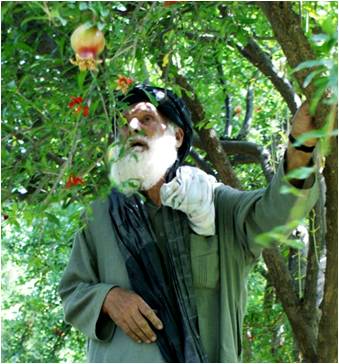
Best Harvest in 30 Years

As a village elder, Hajji Baba cares about his community and knows that his well-being is linked to the security of his envi-ronment and the prosperity of his fellow villagers in the Arghan-dab district of Kandahar Province. Hajji Baba was one of many Arghandab farmers suffering after several years of drought. The farmers couldn’t plough the land, had no fruit on the trees, and didn’t know what to do about the insects on the trees.

Addressing these problems, USAID’s Afghanistan Vouchers for Increased Productive Agriculture (AVIPA) Plus project delivered a large scale sapling project in Kandahar where 6,000 laborers planted 814,000 pomegranate, apricot, plum and grape saplings to rehabilitate more than 6,000 hectares of orchards previously pruned and cleaned by AVIPA Plus laborers.

Like other elders from the villages in southern Afghanistan where this USAID-funded program operates, Hajji Baba heard about AVIPA Plus from his district governor. In the Arghandab District Center, AVIPA Plus personnel asked the elders to pro-vide beneficiary lists for their villages. Soon, formerly unem-ployed people from his village were pruning and cleaning the orchards using new equipment with newly acquired skills.

“This year is much better. In January, AVIPA Plus provided us with saplings and labor to clean and prune the orchards. The program provided us with an organic spray that doesn’t kill the bees. This year we will have the best harvest in the last 30 years,” said Hajji Baba.

Hajji Baba believes the program’s greatest strength is the op-portunity it provides for jobless and landless people. “Unem-ployment and drug addiction were turning these people against peace and security. Now they work with us,” he said.

He is proud of his orchard where he grows apricots, plums, peaches, walnuts, almonds, pistachios, figs—and, of course, pomegranates and grapes for which the region is famous.

Hajji Baba’s community is one of the many AVIPA Plus is work-ing with to improve the stability and prosperity in this harsh en-vironment.